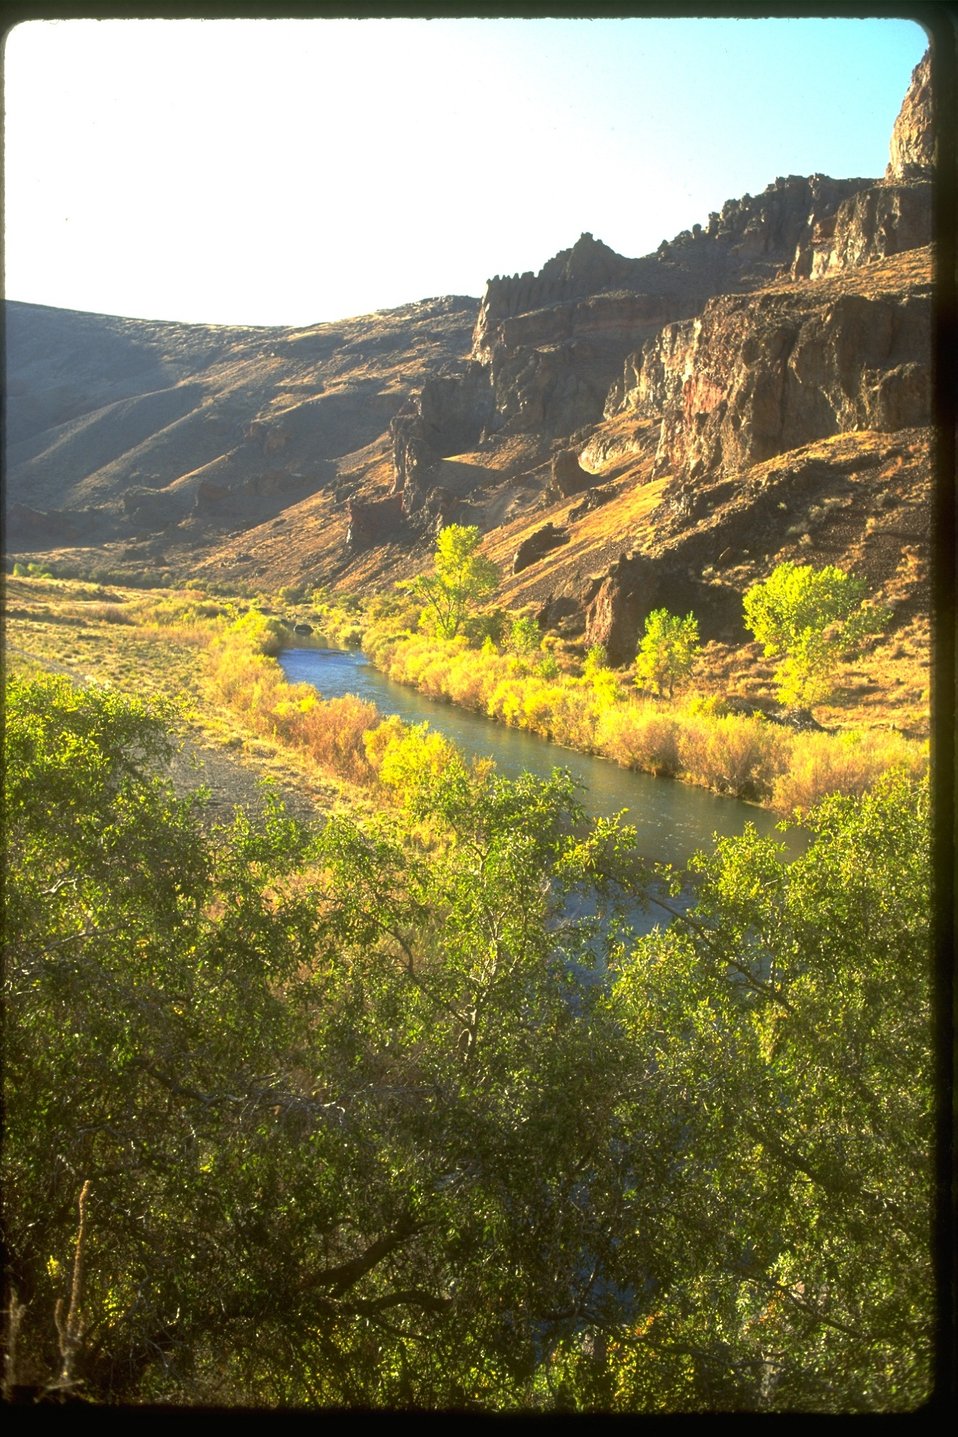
Owyhee River Area.